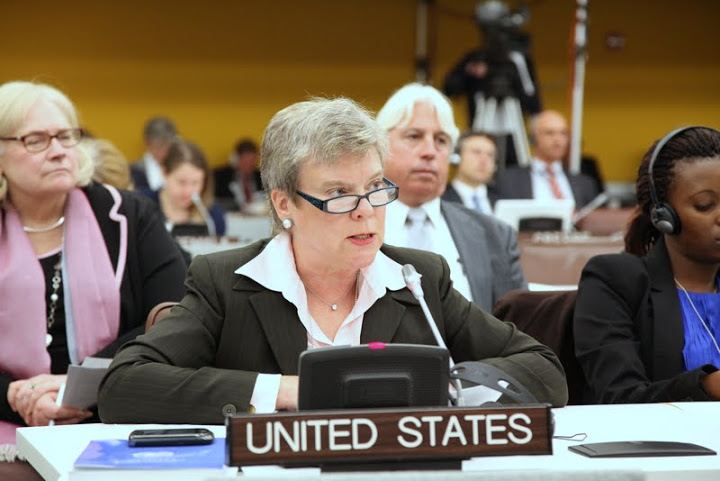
Acting Under Secretary Gottemoeller Addresses the First Committee - Disarmament and International Security

Acting Under Secretary for Arms Control and International Security Rose Gottemoeller delivers remarks at the First Committee - Disarmament and International Security at the United Nations General Assembly in New York, October 10, 2012.